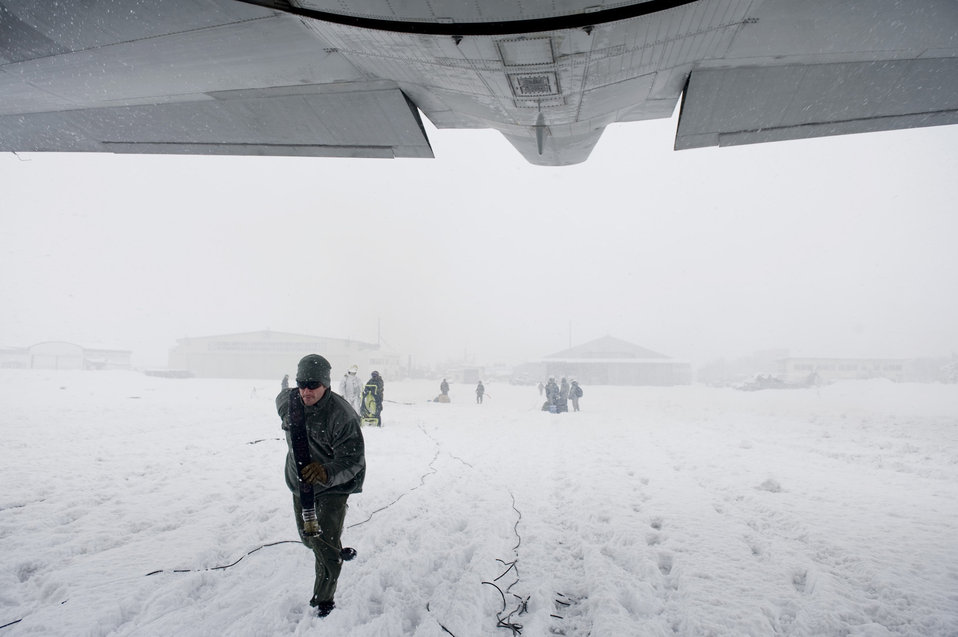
Forward area refueling point

Tech. Sgt. Paul Hammer runs a fuel line to an MC-130P Combat Shadow March17, 2011, at Yamagata Airport, Japan. Sergeant Hammer is assigned to the 353rd Special Operations Group.